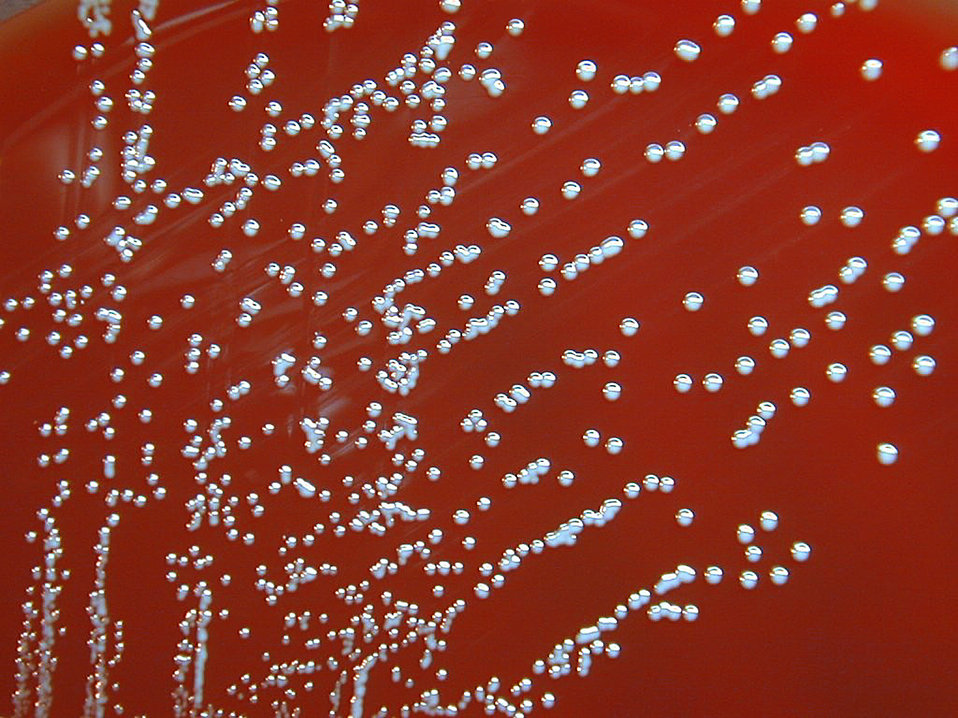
Brucella melitensis colonies.